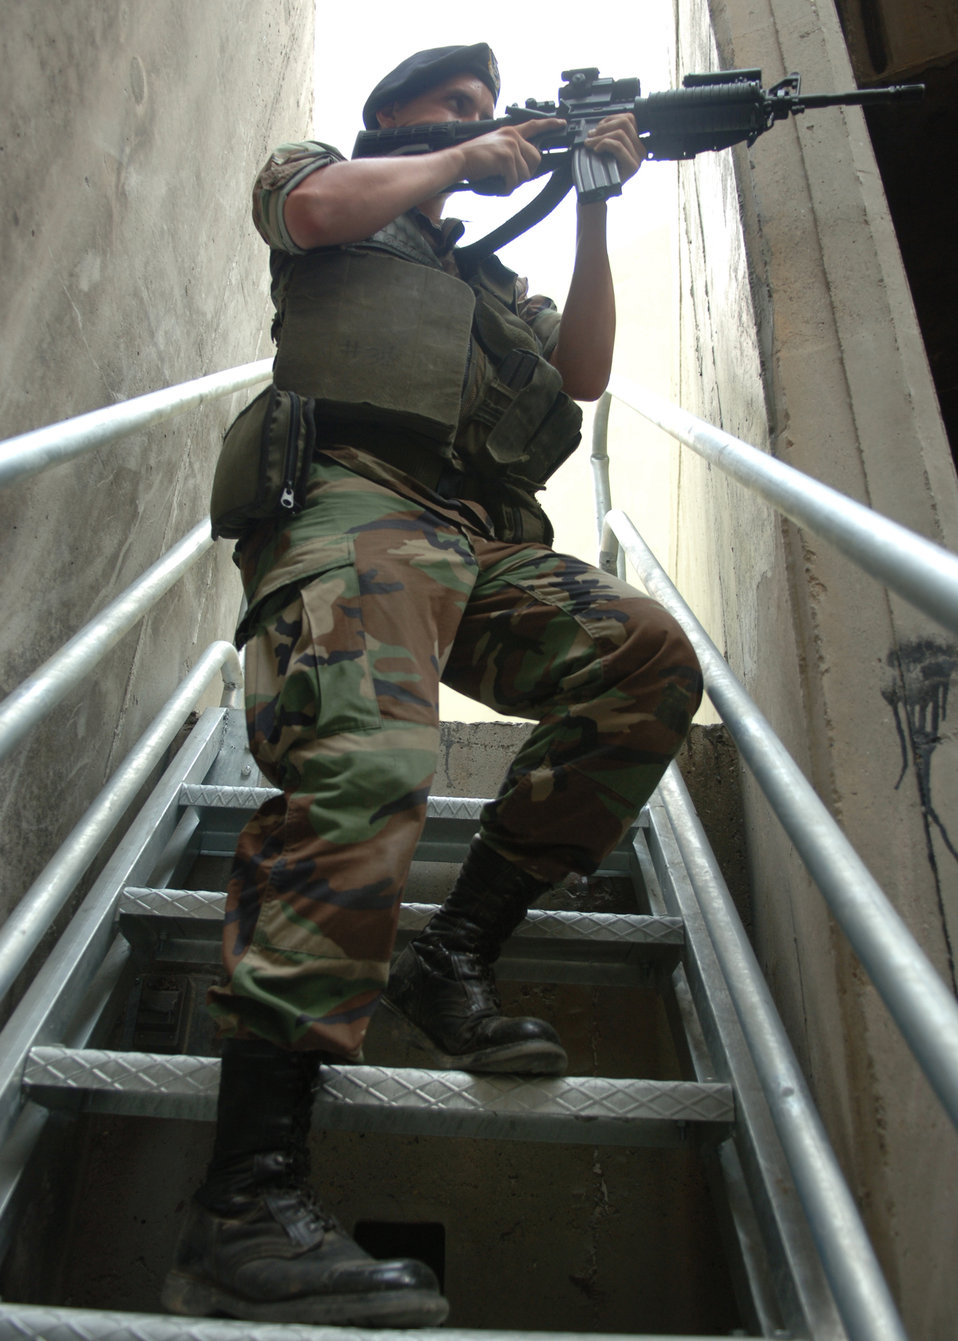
Best in Air Force

The 39th Security Forces Squadron is the best Large Security Forces Squadron in the Air Force for 2006. The award encompasses nearly every duty position security forces performs including community service.